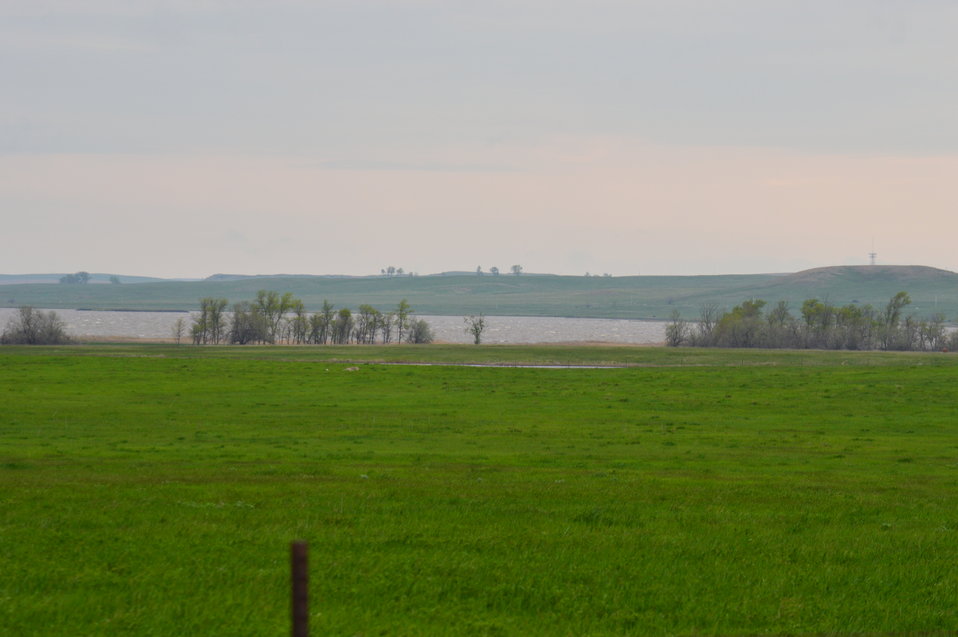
Lake Ilo

Scenery and wildlife at Lake Ilo National Wildlife Refuge in North Dakota